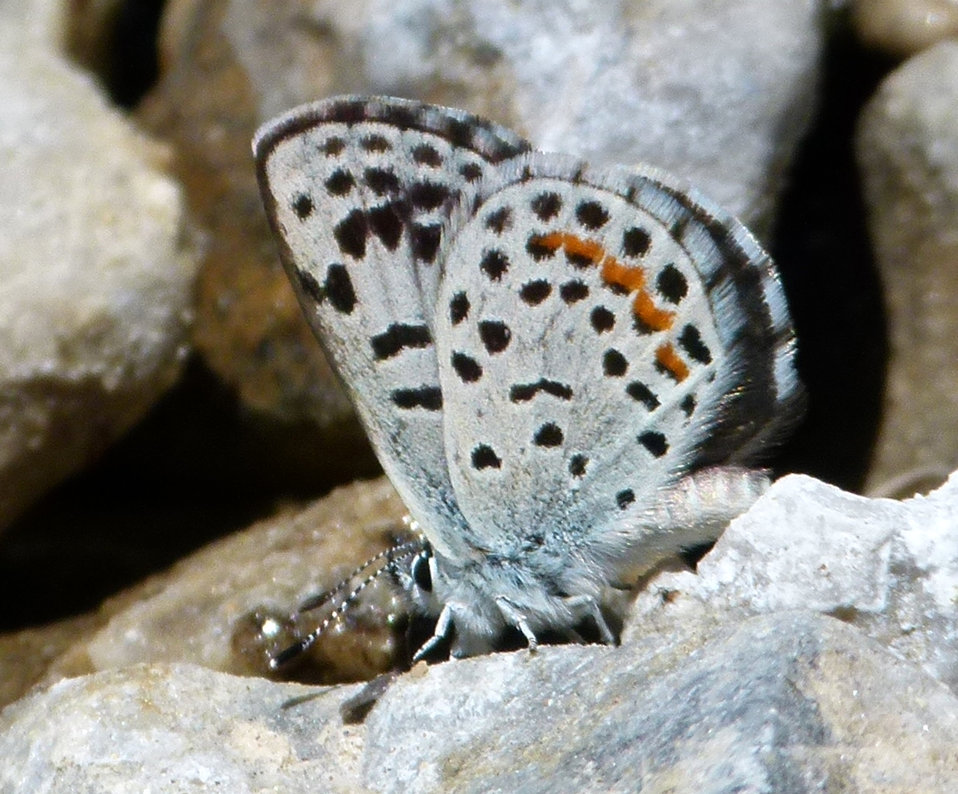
Spring Mountains dark blue early (Euphilotes ancilla purpura)